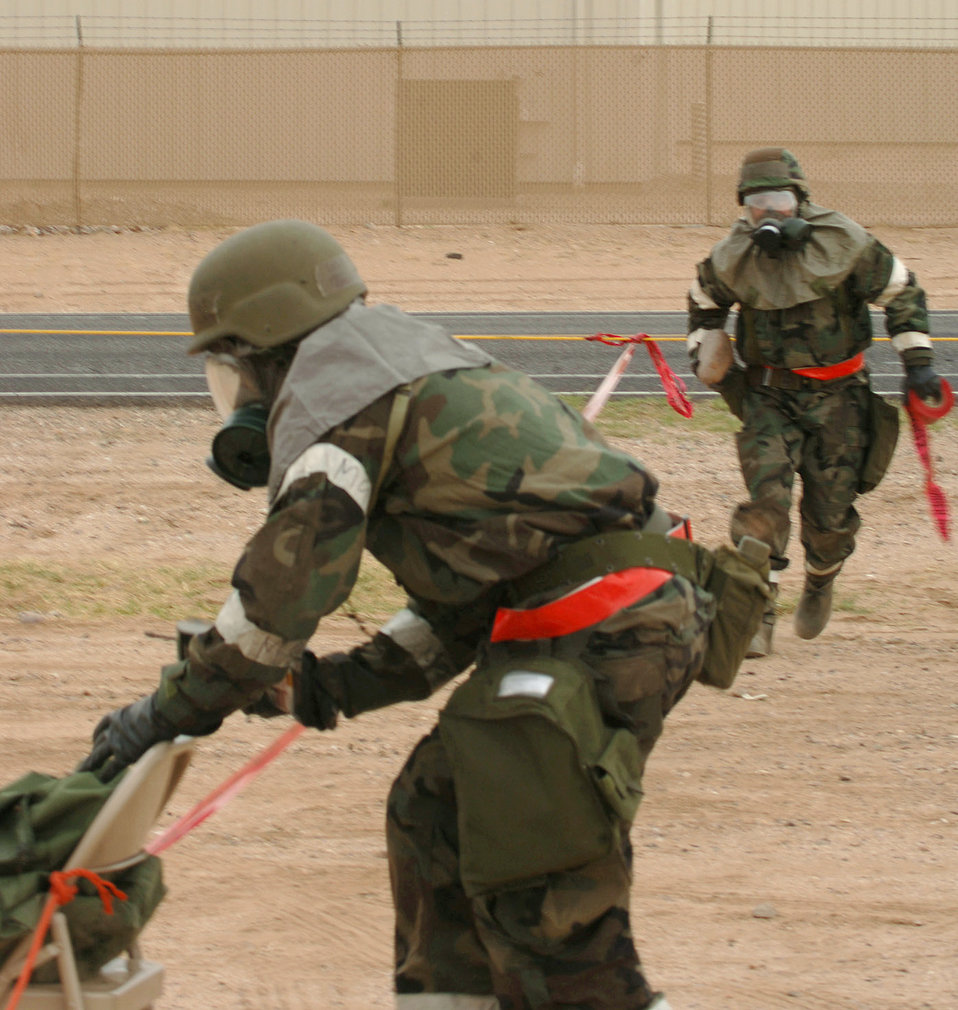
Preparing to deploy

Tech. Sgt. Mark McKay and Staff Sgt. Rodney Jeter-Hicks cordon off the area where a simulated bomb is located during an exercise at a simulated deployed location on Tuesday, April 4, 2006.